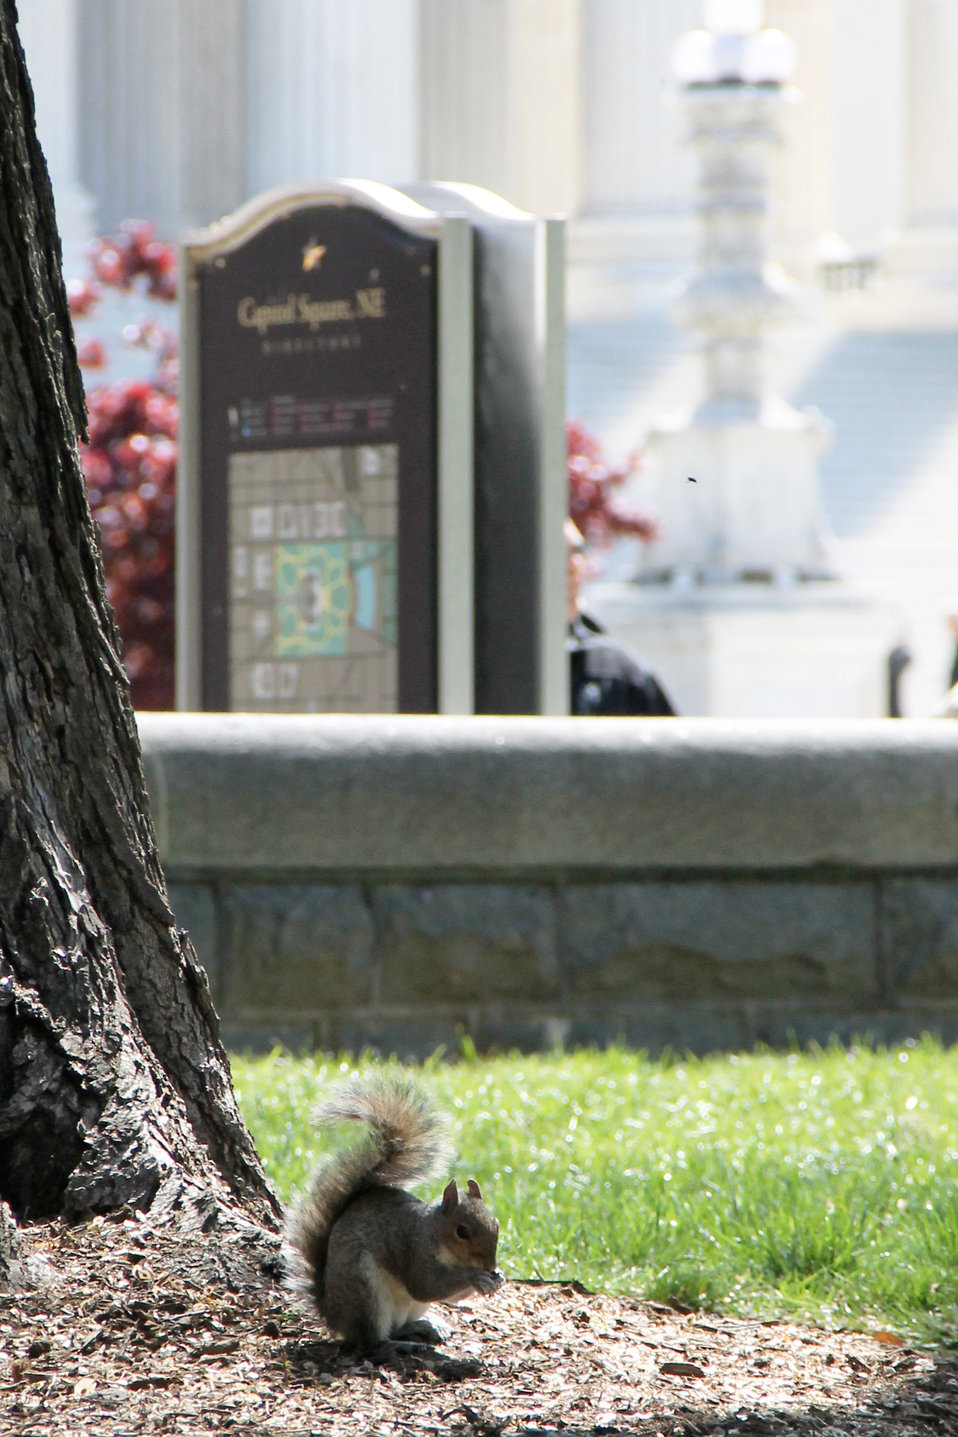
Squirrel on Capitol Square

The AOC has recently uncovered 113 years of history surrounding squirrels on Capitol Hill: www.aoc.gov/cc/grounds/Squirrels-on-the-Capitol-Grounds.cfm.